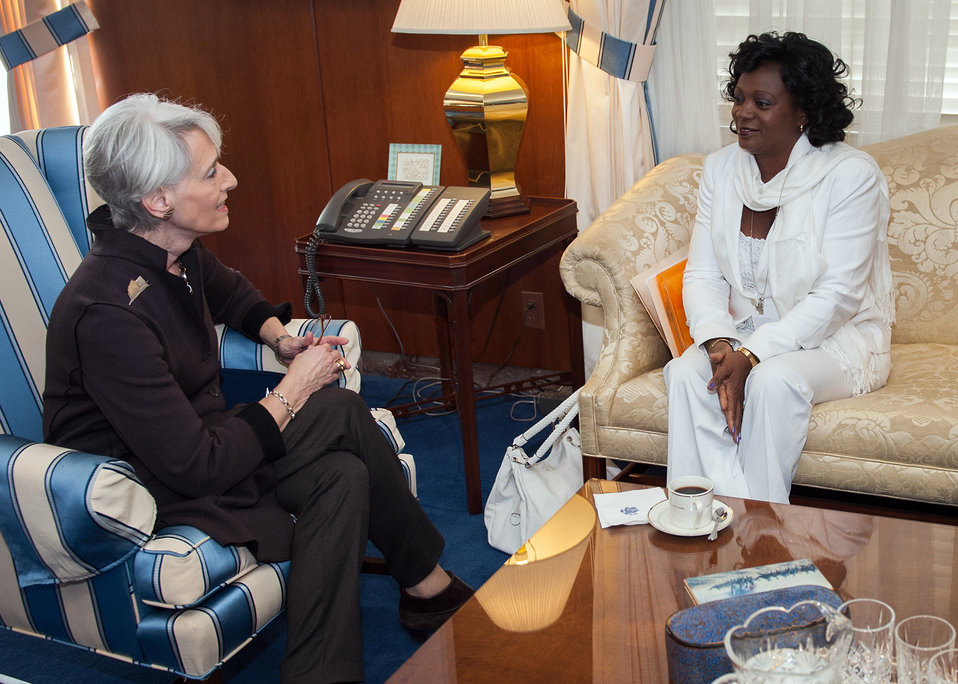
Under Secretary Sherman Meets With Berta Soler of the Ladies in White

Under Secretary for Political Affairs Wendy Sherman meets with Berta Soler, Spokesperson for the Ladies in White (Damas de Blanco), at the U.S. Department of State in Washington, D.C., on October 24, 2013.